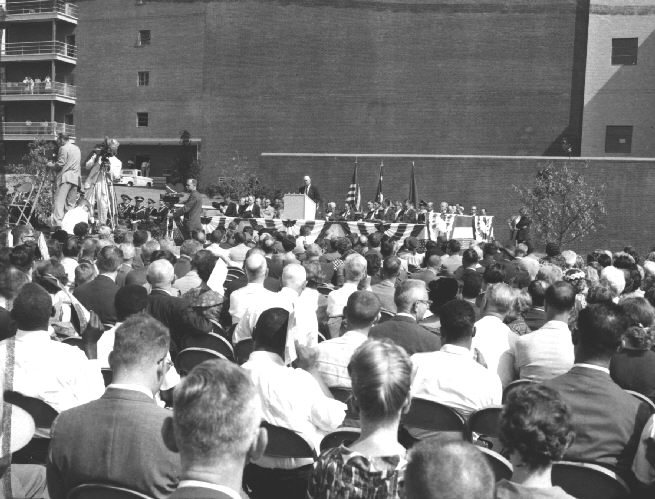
CDC Dedication Ceremony.